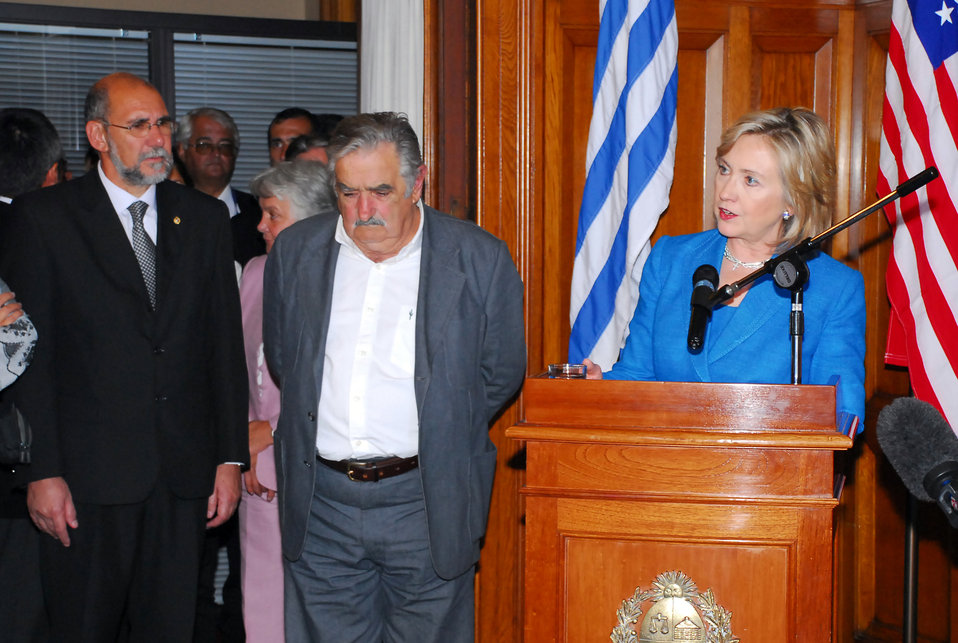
Secretary Clinton Delivers Statement

U.S. Secretary of State Hillary Rodham Clinton delivers a statement after meeting with President Elect of Uruguay José Mujica at the Legislative Palace in Montevideo, Uruguay March 1, 2010.